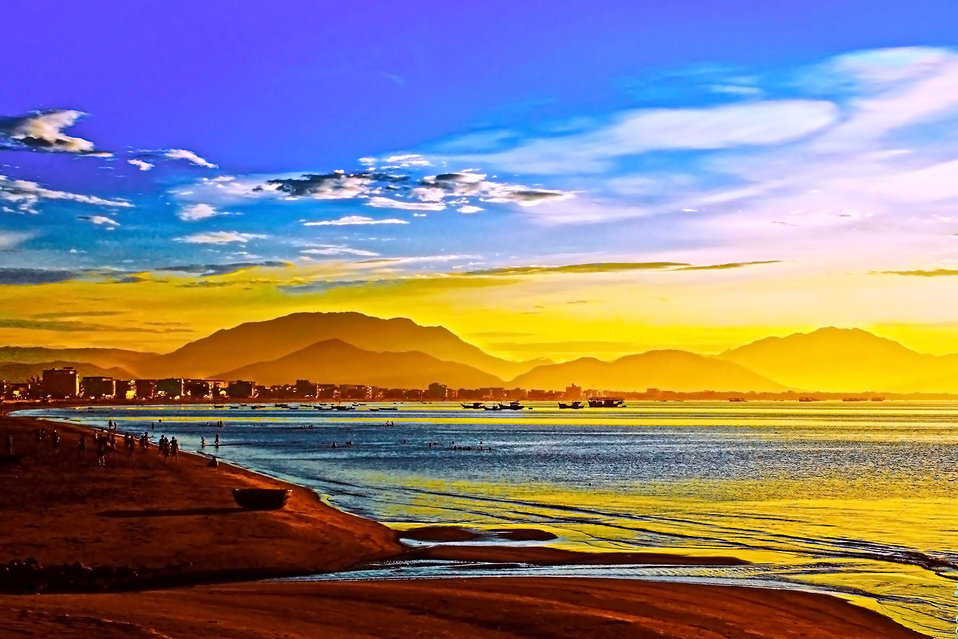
Sunset #6

Sunset on the bay of danang, central vietnam..